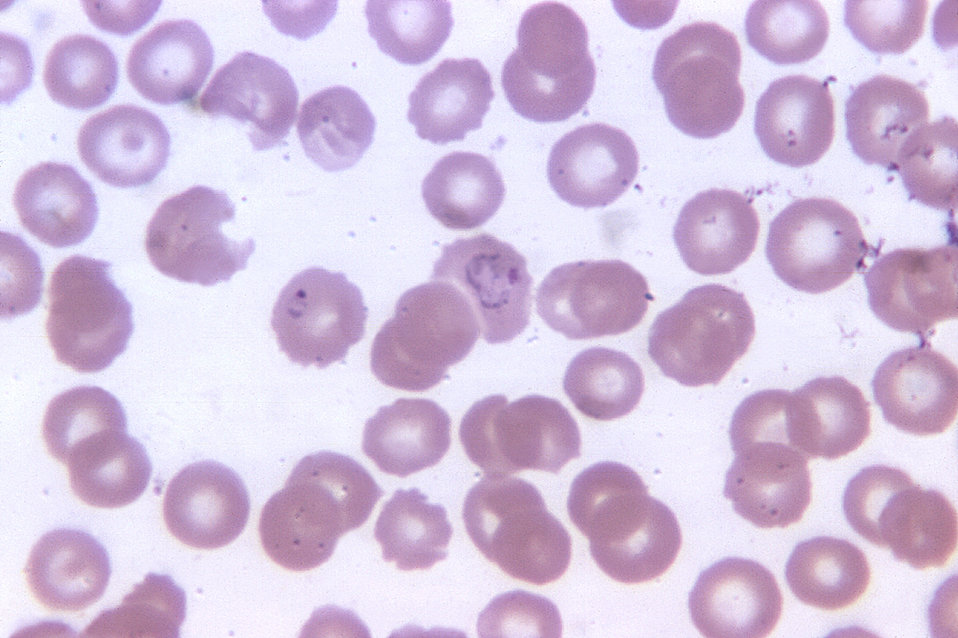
The preparation process that created this Giemsa stained micrograph yielded a 'marginal' quality slide.